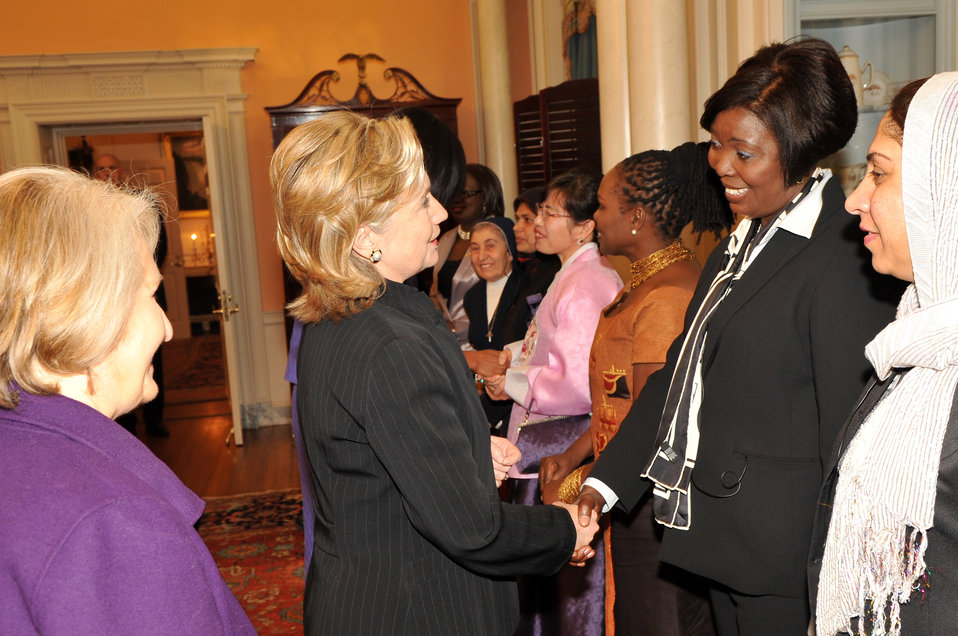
Secretary Clinton Shakes Hands With Honoree Sonia Pierre

U.S. Secretary of State Hillary Rodham Clinton shakes hands with Honoree Sonia Pierre of the Dominican Republic at the 2010 International Women of Courage at the U.S. Department of State, Washington, D.C. March 10, 2010.